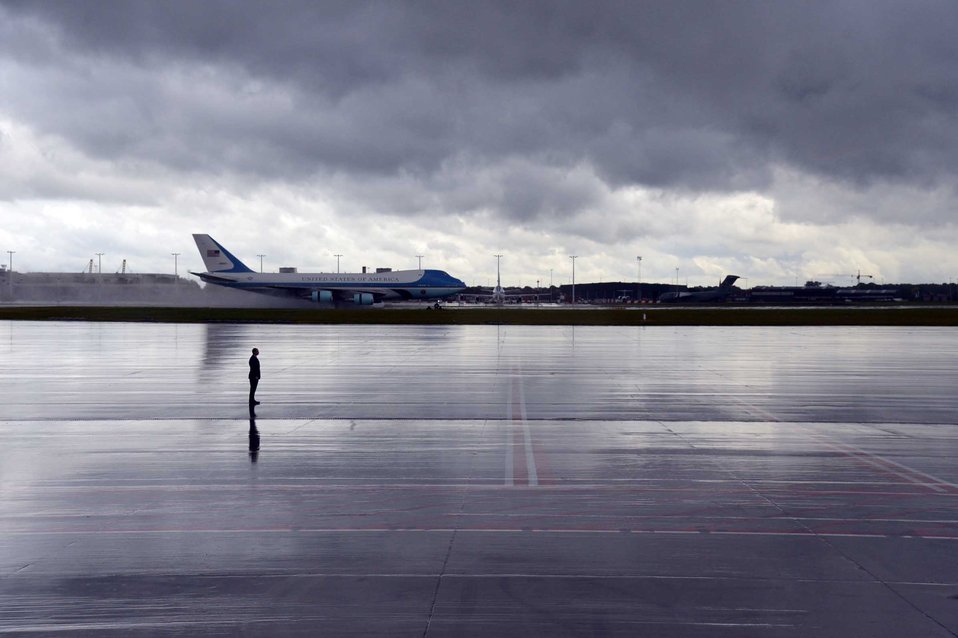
Air Force One Touches Down in Belgium

Air Force One touches down at Melsbroek Air Base outside of Brussels, Belgium, on June 4, 2014.